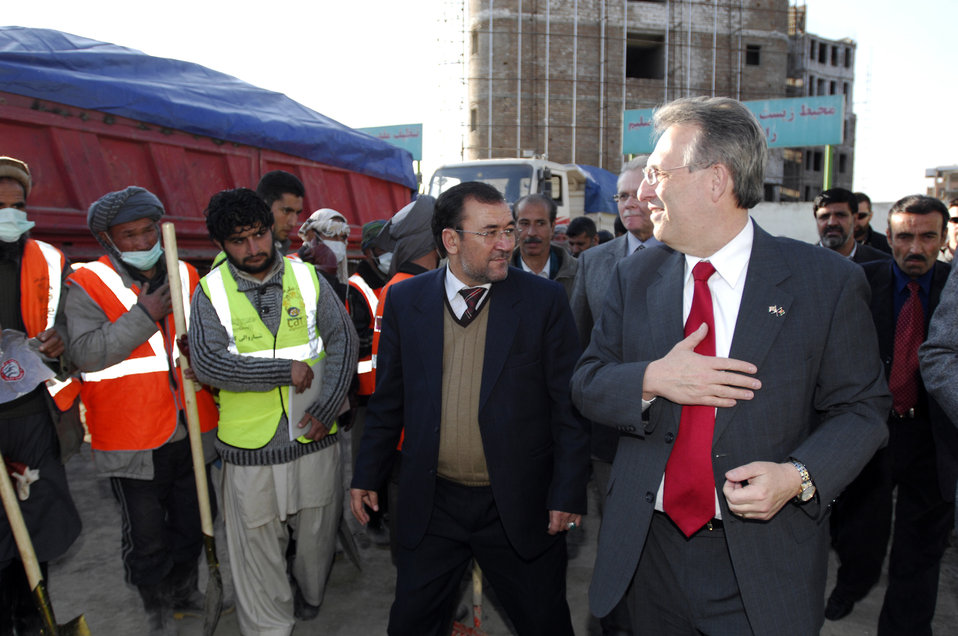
Care41